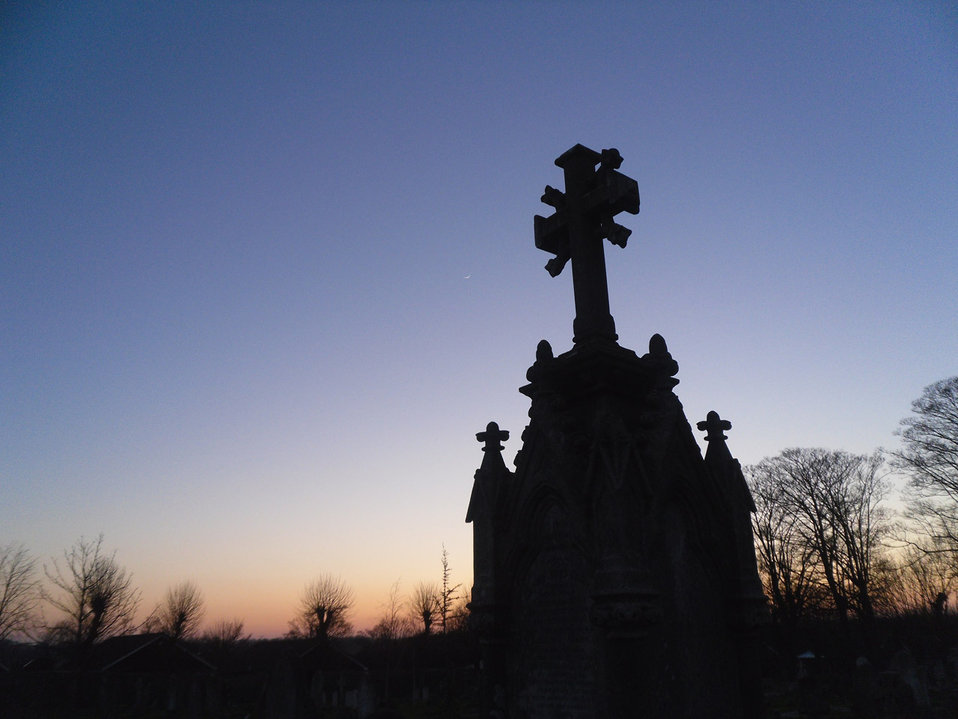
Sky stone object

Evening view of stone shape in cemetery with nice shape.